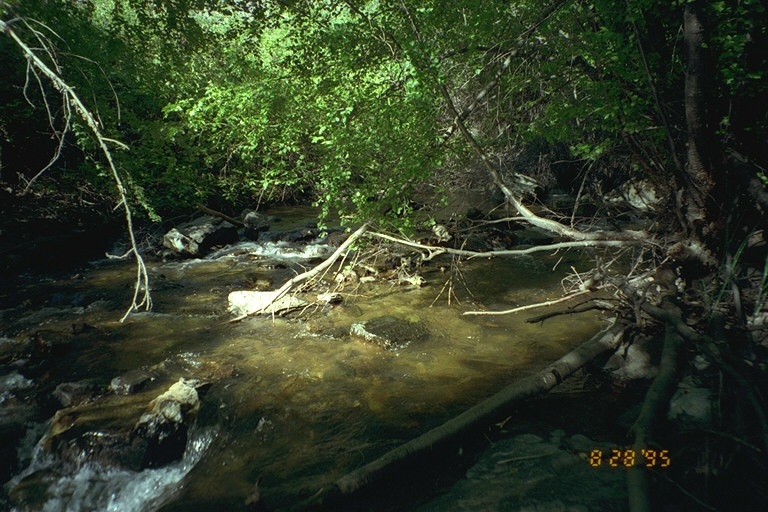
Riparian area Public Lands Salmon Field Office UCSC Upper Columbia Salmon Clearwater District